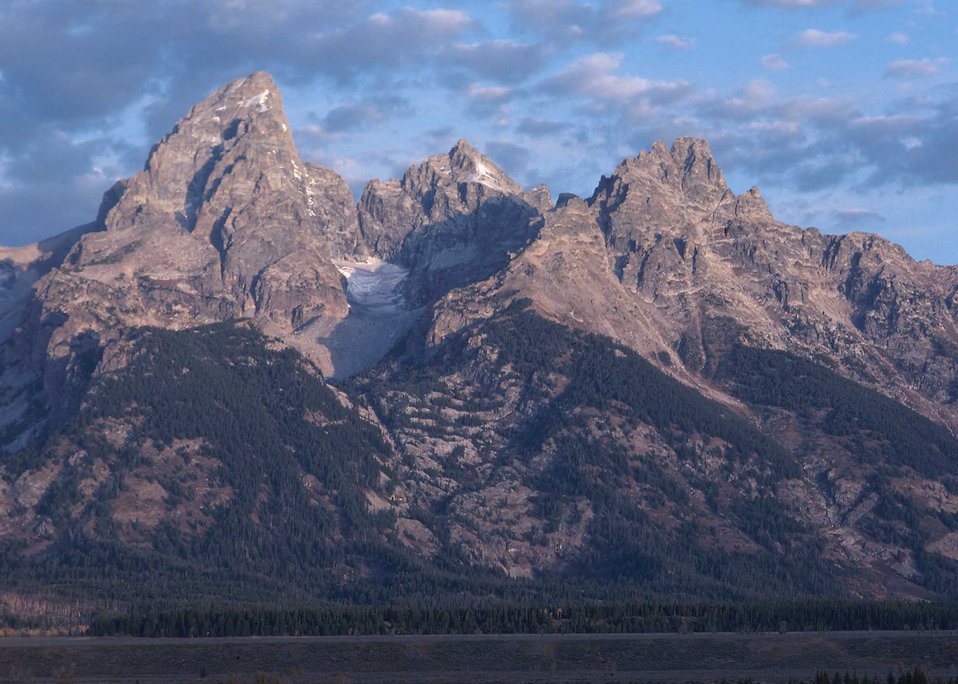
Grand Teton near Jackson, Wyoming.